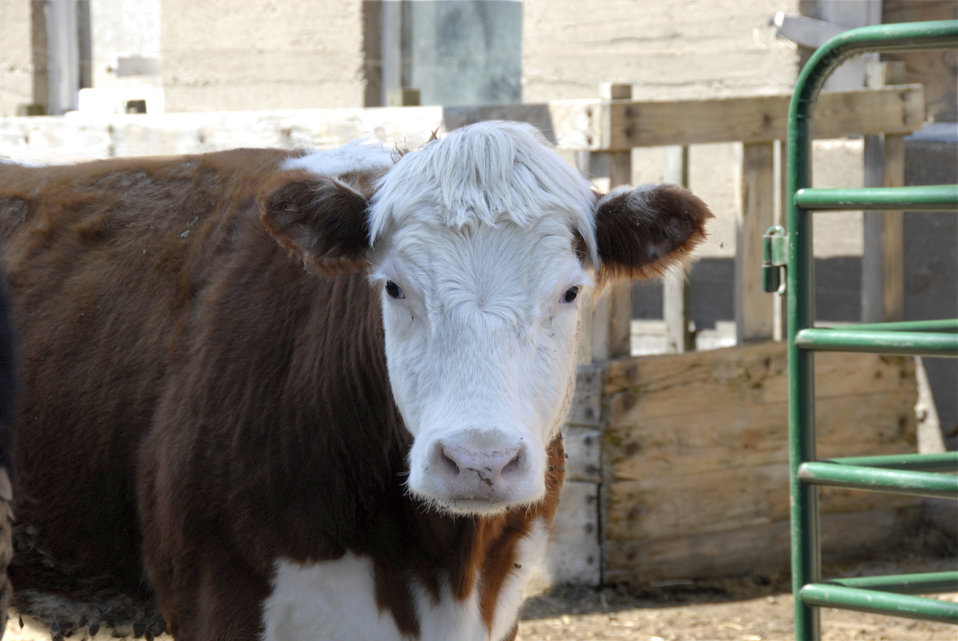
Beef cattle graze in an enclosed area on the Gehrke farm in Elgin, Illinois on April 5, 2008.